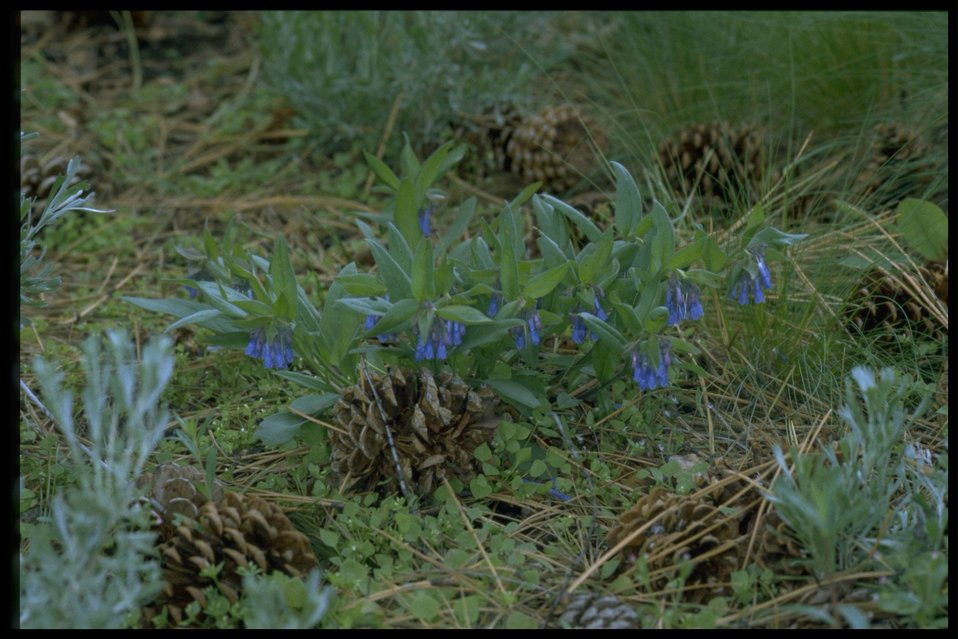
Farshot of small bluebells (Mertensia longiflora).